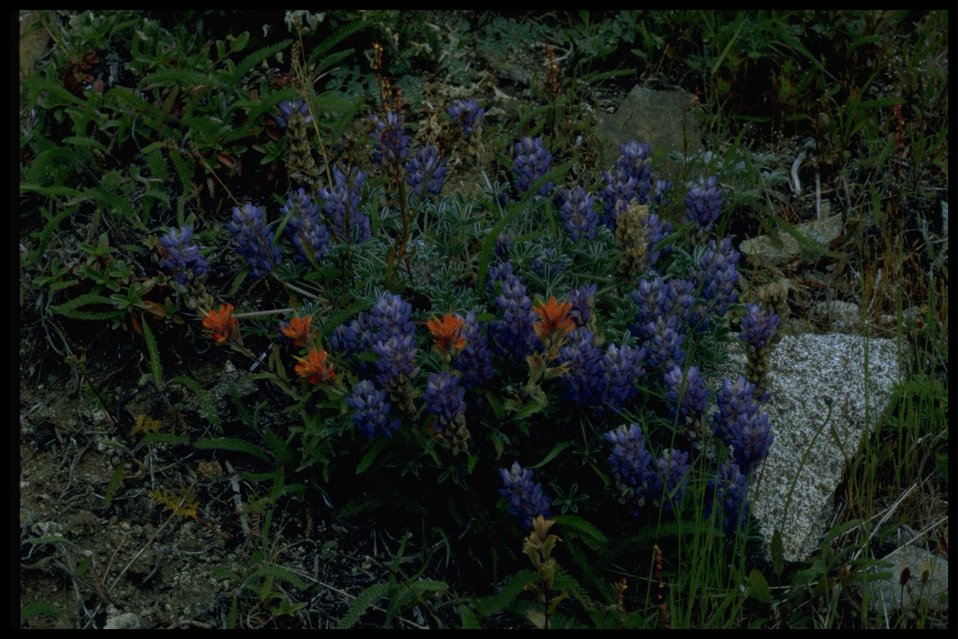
Medium shot of lupine and Indian paintbrush wildflowers (genus Lupinus and Castilleja).